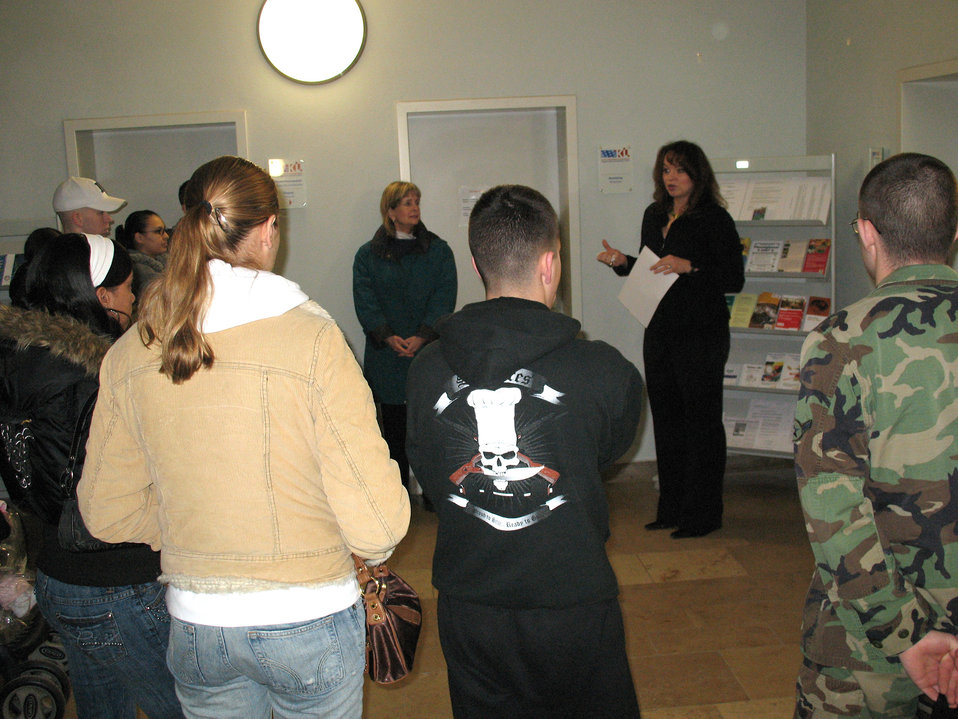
German community office is one-stop info shop for Americans

The German-American Comminuty Office staff brief newcomers during a USO tour of the Kaiserslautern area. The GACO members explain to the newly relocated where to find the GACO office and get information on the services the GACO offers. With over 50,000 Americans stationed in the Kaiserslautern area the GACO sees a high volume of customers.